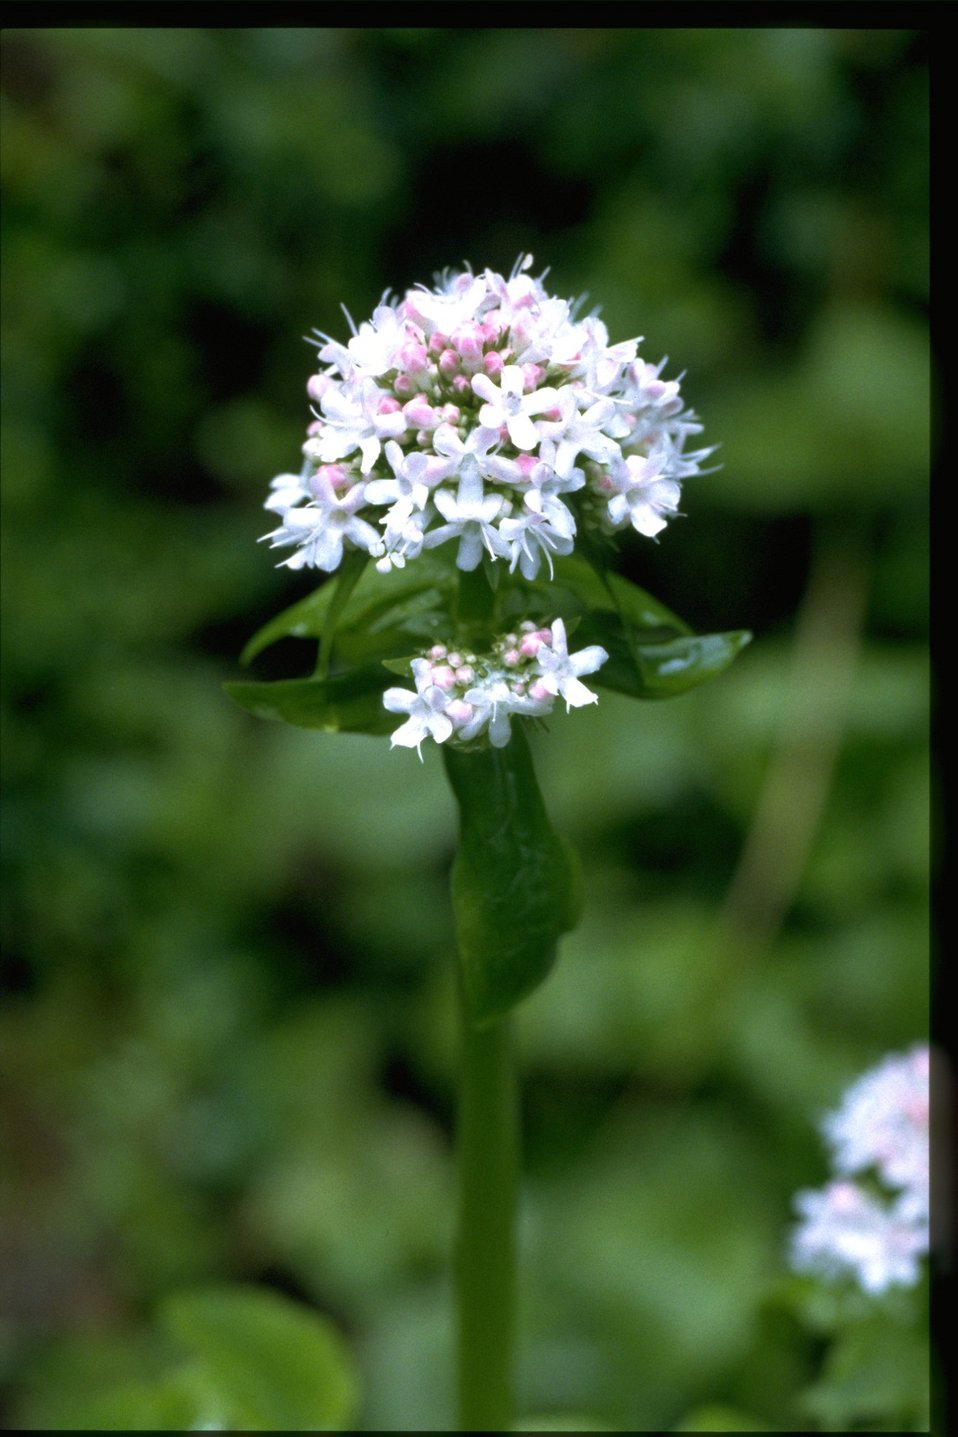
Medium shot of Valeriana sitchensis.